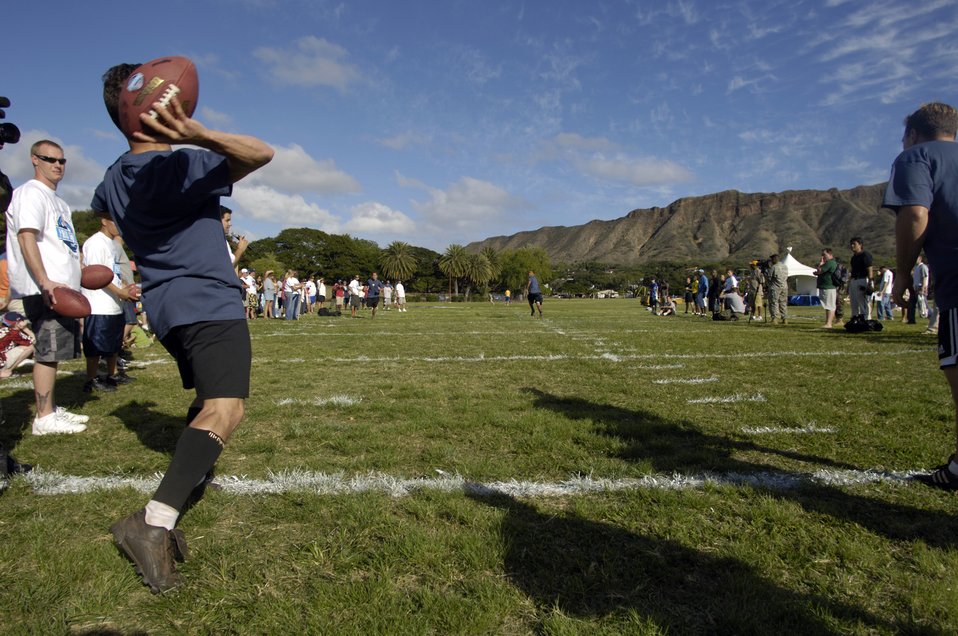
NFL Military Challenge

KAPIOLANI PARK, Hawaii (AFPN) -- Claude Jennings launches a pass during the National Football League Military Challenge. Jennings made 10 consecutive maximum-point completions to his five teammates ensuring the Air Force took top honors. Each service competed in punt, pass, snapping and kicking competitions.